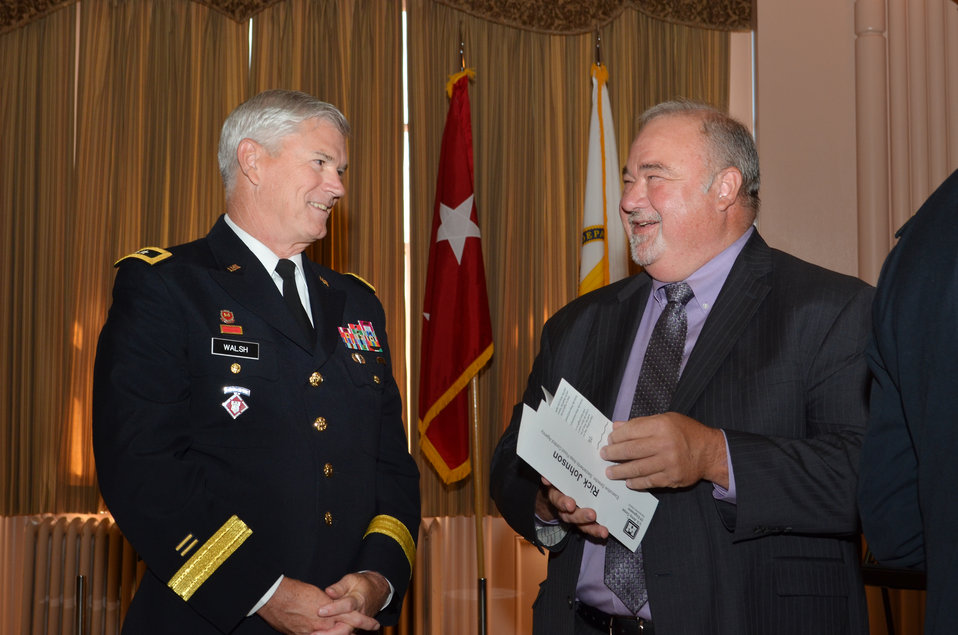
Major Gen. Walsh talks with Richard Johnson

Major Gen. Michael J. Walsh, Deputy Commanding General for the U.S. Army Corps of Engineers Civil and Emergency Operations, talks with Richard Johnson, executive director of the Sacramento Area Flood Control Agency, following the Sacramento District’s change of command ceremony July 10, 2013 at the Masonic Temple in Sacramento, Calif.